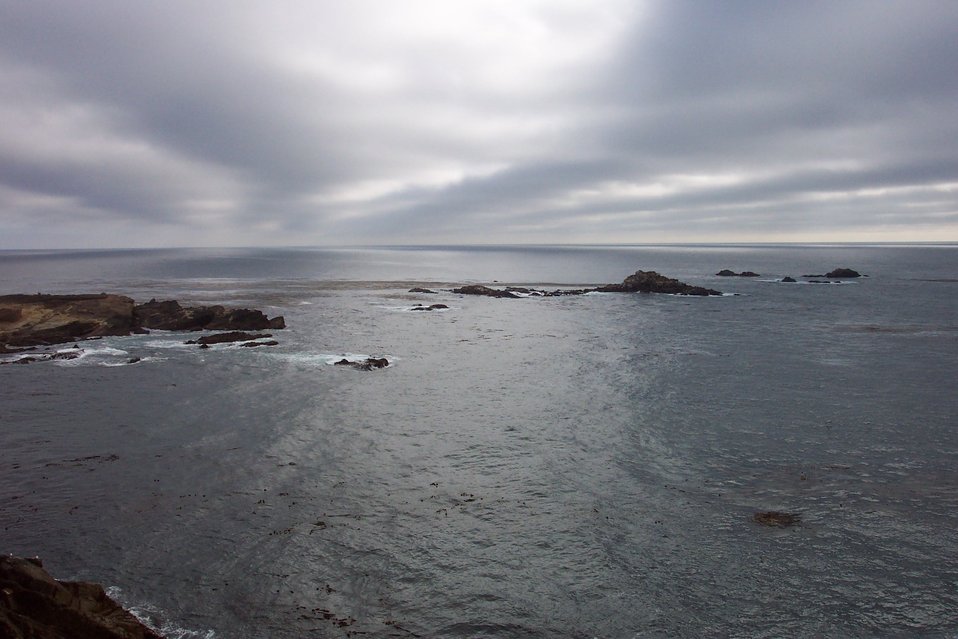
Gray clouds, black rock and a gray sea at Point Lobos State Reserve.